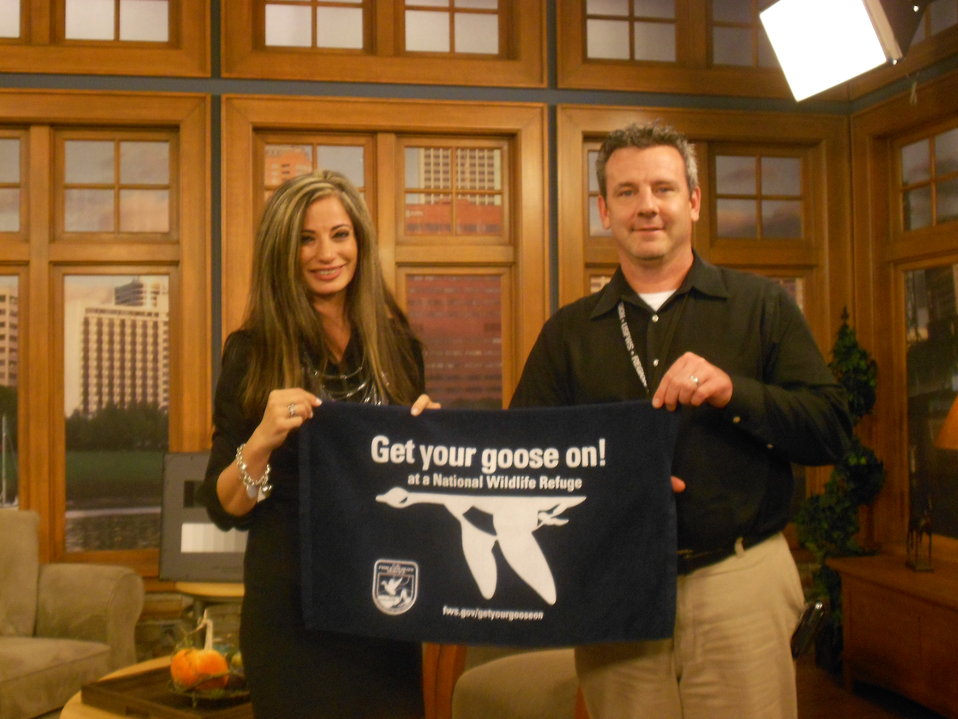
Get Your Goose On! - En Español

Suzan Sami Khouri, Account Executive for Portland's Hispanic Television station Univision - KUNP, and Jason Holm, the USFWS Pacific Region's Assistant Regional Director for External Affairs, Get their Goose On!